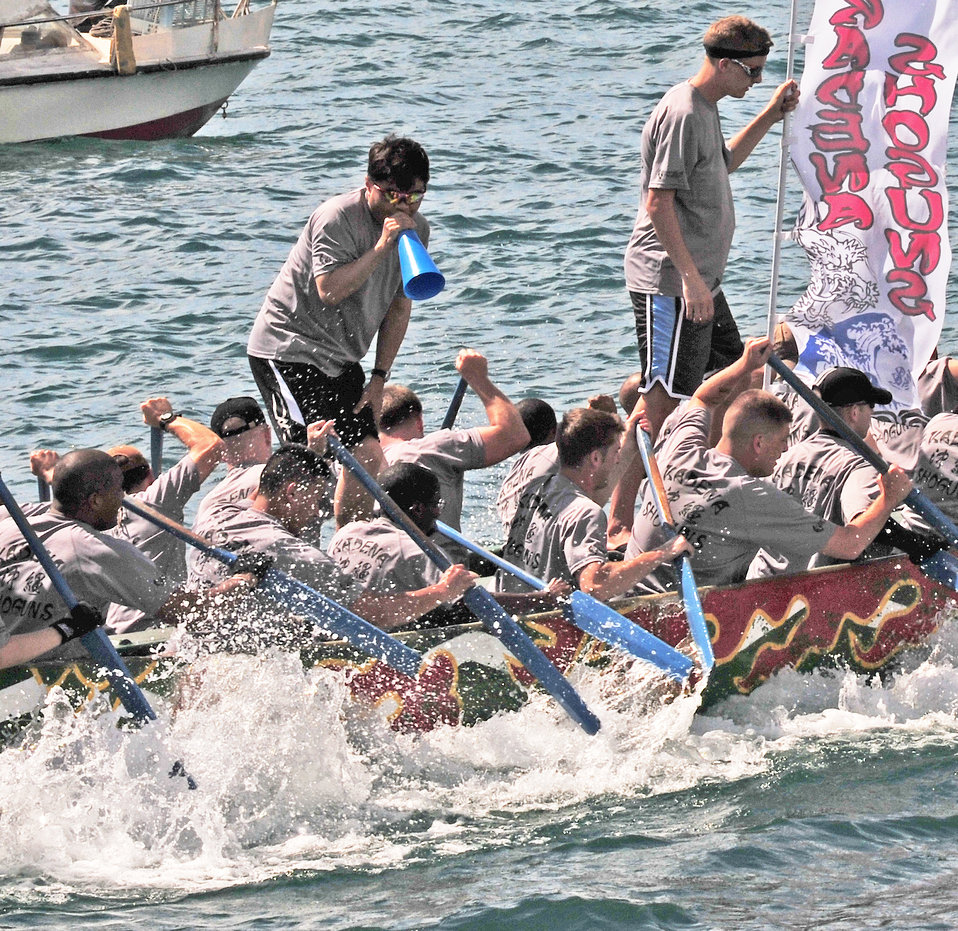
Keep on paddling!

Hideaki Sakihama